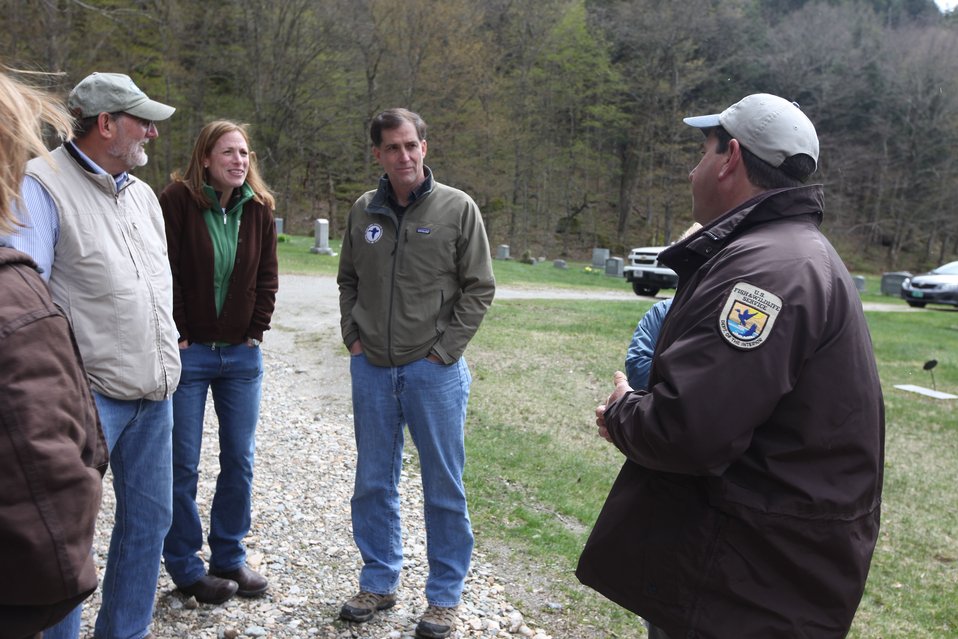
Dan Ashe hears about the work of the Partners program in Vermont

U.S. Fish & Wildlife Service Director Dan Ashe visits the Northeast Region
for a tour of the White River National Fish Hatchery in Bethel, Vermont on
April 27, 2012. The hatchery was devastated by Tropical Storm Irene and
Dan Ashe had the chance to meet and thank the staff for their heroic work.
Director Ashe also visited restoration/flood response/fish passage project
sites in Rochester, Vermont and met with local officials and staff from the
White River Partnership.